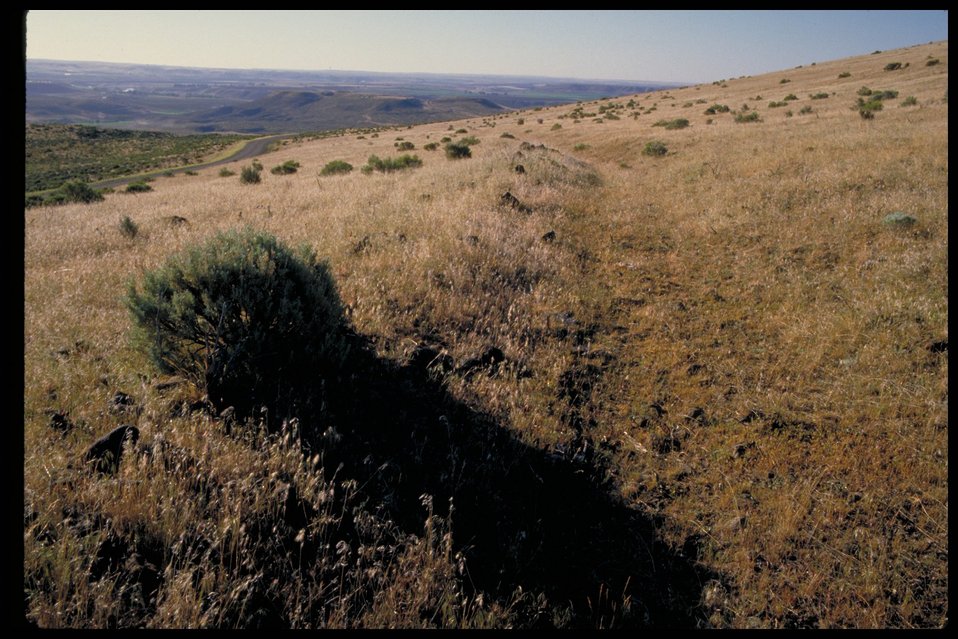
Oregon Trail west of King Hill Creek Lower Snake River District